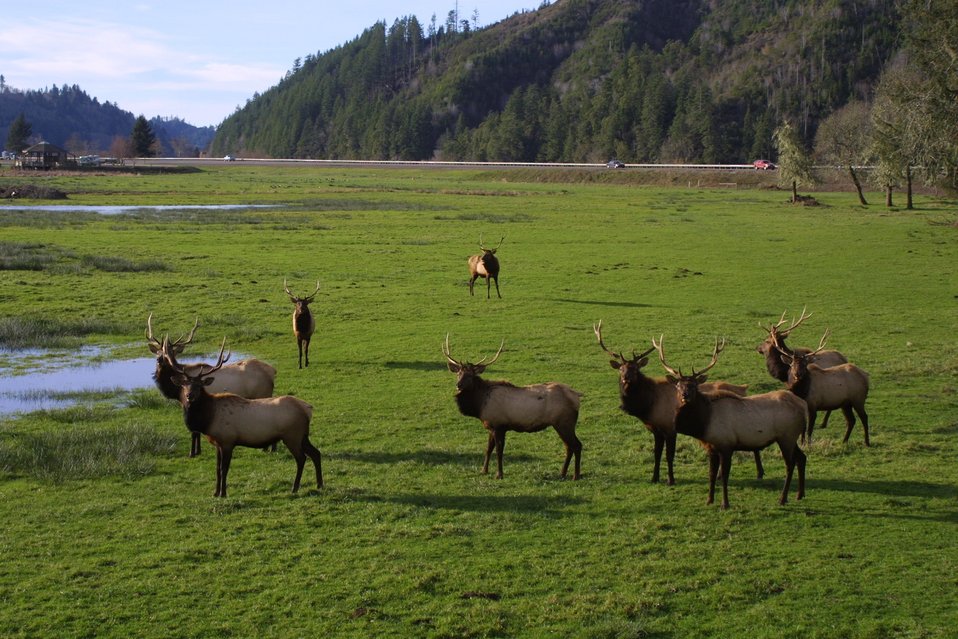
Elk at the Dean Creek Watchable Wildlife site near Reedsport, Oregon.